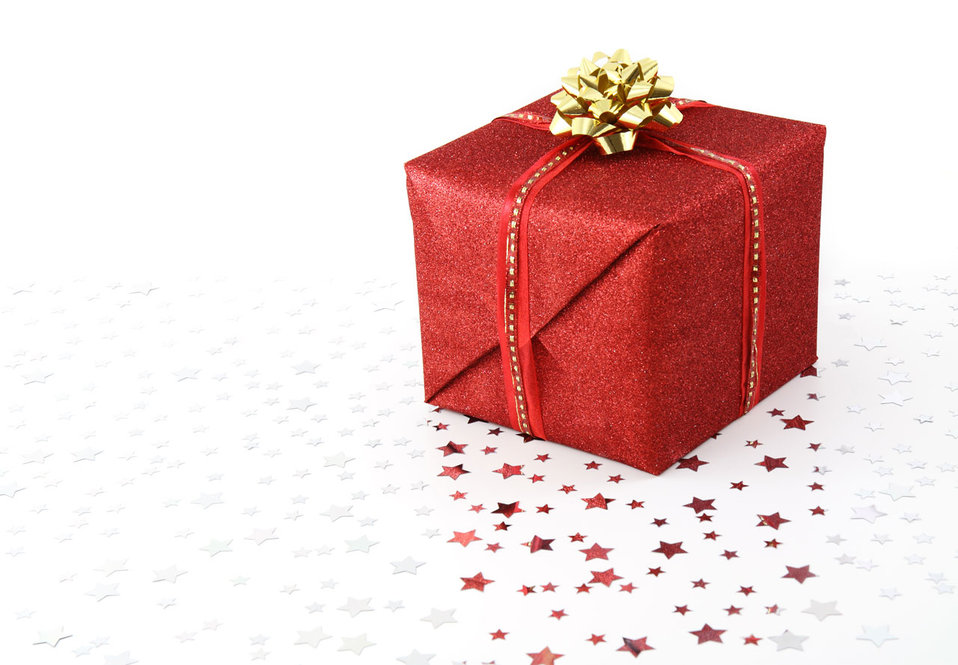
Christmas present

Red christmas present on white background.